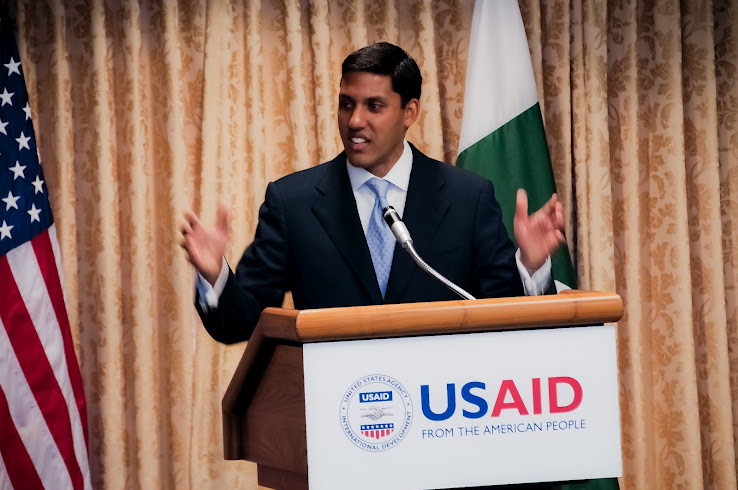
Dr. Rajiv Shah

WASHINGTON, D.C. – This week, Jonathan Conly was sworn in as the new U.S. Agency for International Development (USAID) Country Director for Pakistan. USAID Administrator Dr. Rajiv Shah presided over the ceremony and administered the oath in the presence of Mr. Conly’s family, friends, and colleagues, as well as members of the Pakistani-American community and the Pakistan Embassy’s Deputy Chief of Mission, Dr. Asad Majeed Khan.